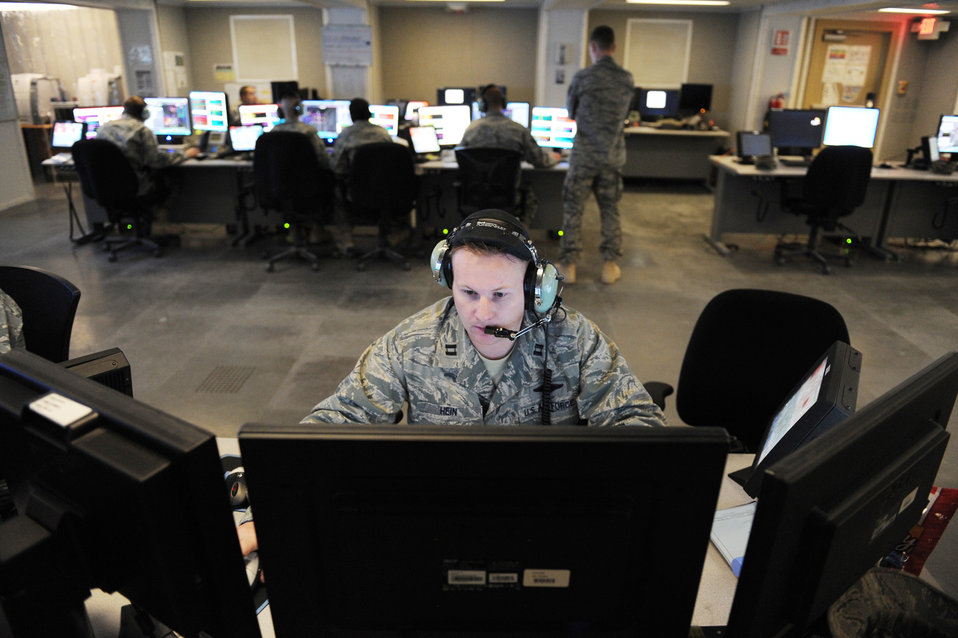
Remote ground radar keeps AOR personnel safe

Capt. Owen Hein directs both support and combat aircraft into target areas July 13 in Southwest Asia. The 71st EACS provides around-the-clock air defense and air battlespace management of the area of responsibility. Captain Hein is the 71st Expeditionary Air Control Squadron air weapons officer and a native of Roswell, N.M. He is deployed from Tinker Air Force Base, Okla.